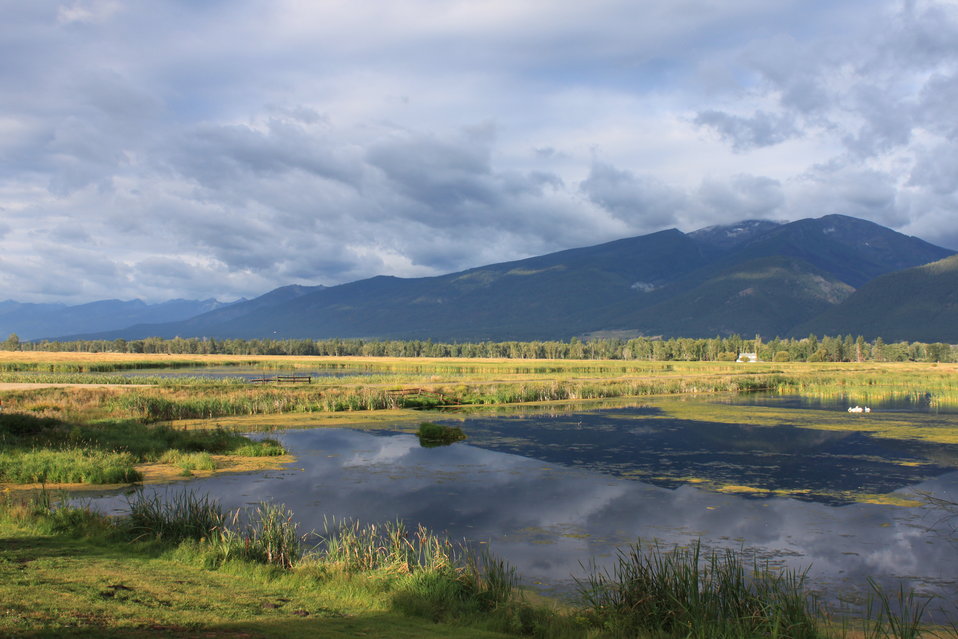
Summer Refuge Wetlands at Lee Metcalf National Wildlife Refuge

Ponds 5 & 6 with Bitterroot Mountains in the background.